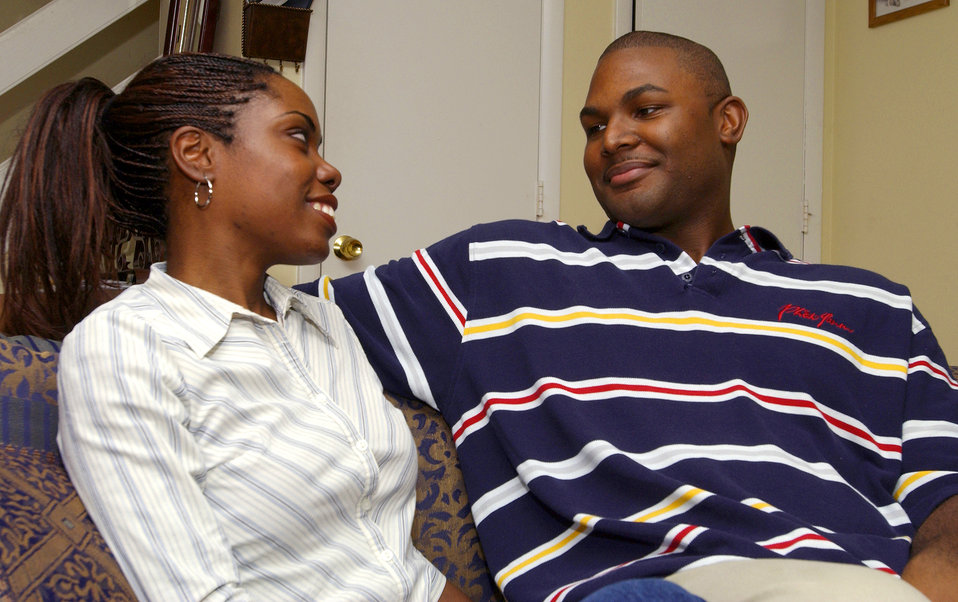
Lucas

MCGUIRE AIR FORCE BASE, N.J. -- Natasha Wellington-Lucas and her husband, Staff Sgt. Anthony Lucas, spend some quality time together before she underwent a kidney transplant Sept. 23. Lucas donated a kidney to his wife. He is assigned to the 605th Aircraft Maintenance Squadron here.